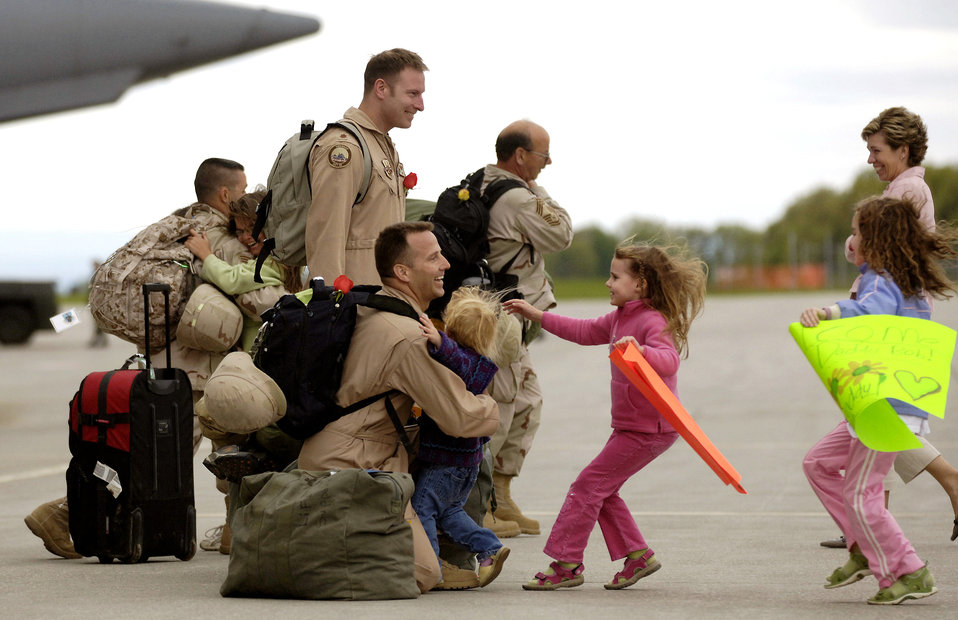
'Green Mountain Boys' come home

Lt. Col. Robert Ammon embraces his 2-year-old daughter, Jessica, while 5-year-old Casey and 7-year-old Megan follow quickly behind in South Burlington, Vt., on Monday, May 22, 2006. Colonel Ammon is with the Vermont Air National Guard's 158th Fighter Wing. He and other